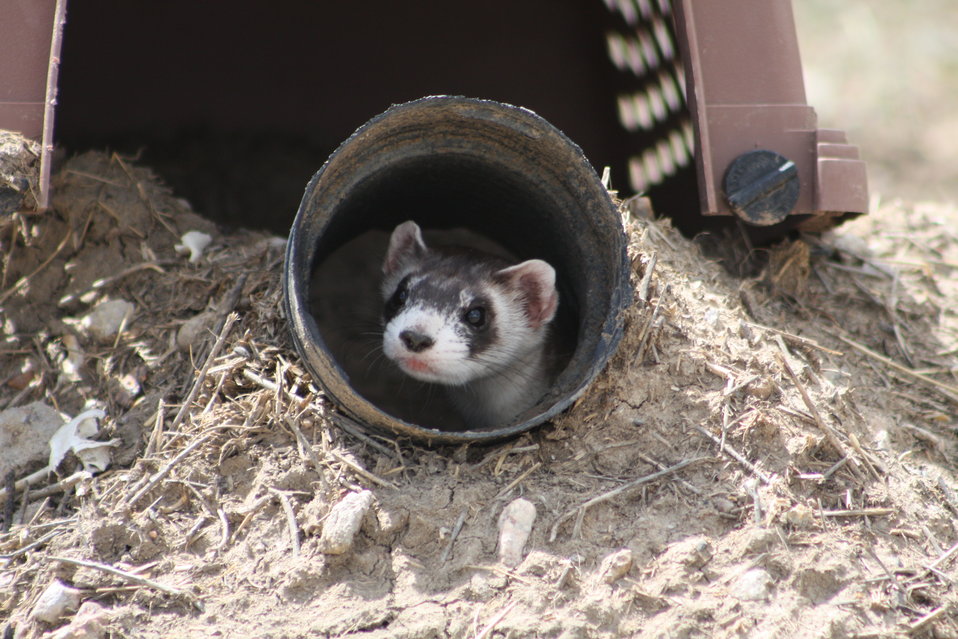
Interns visit the NBFFCC

In the summer of 2012, USFWS Region 6 interns visited the National Black-footed Ferret Conservation Center (NBFFCC) in Colorado to learn how the program reintroduces the endangered Black-footed ferret back into its native habitat.